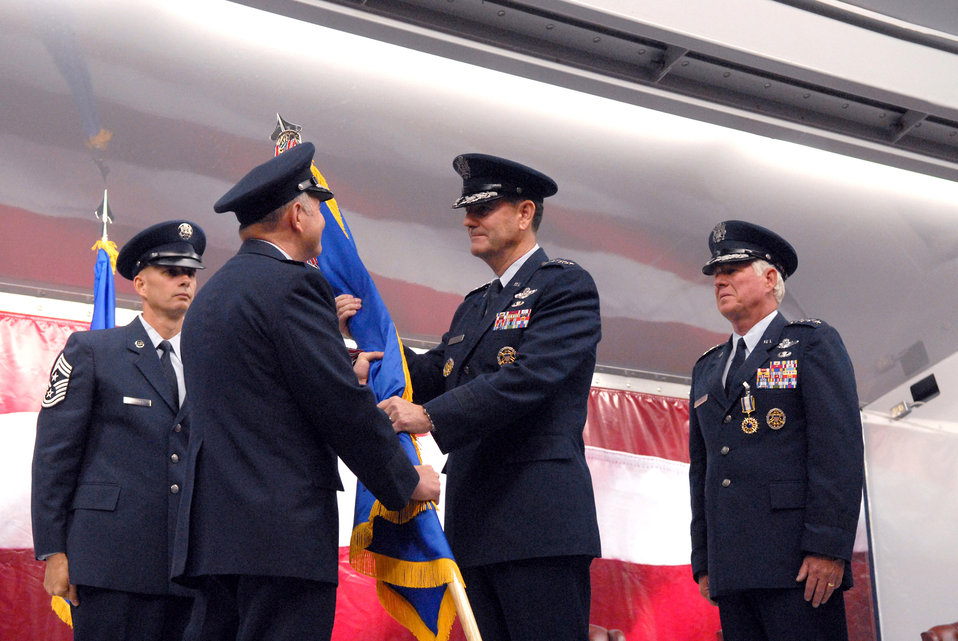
General Lorenz takes command of AETC

Gen. Stephen R. Lorenz assumes command of Air Education and Training Command July 2 at Randolph Air Force Base, Texas. He replaced Gen. William R. Looney III, who retired during the ceremony. Air Force Vice Chief of Staff Gen. Duncan J. McNabb presided at the ceremony.